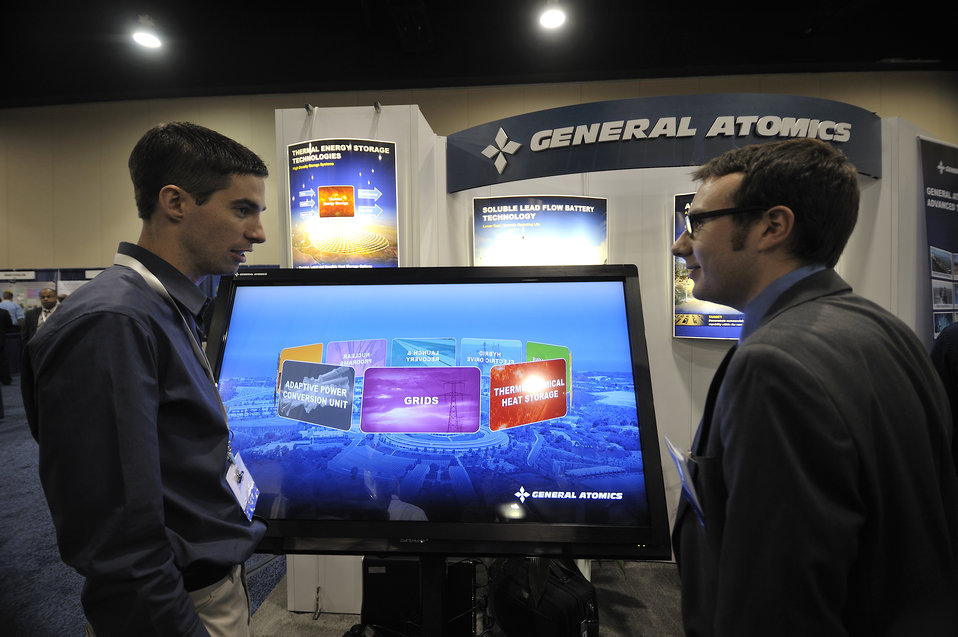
ARPA-E Energy Innovation Summit 2011, 48 of 83

General Atomics booth at the Summit's Technology Showcase.